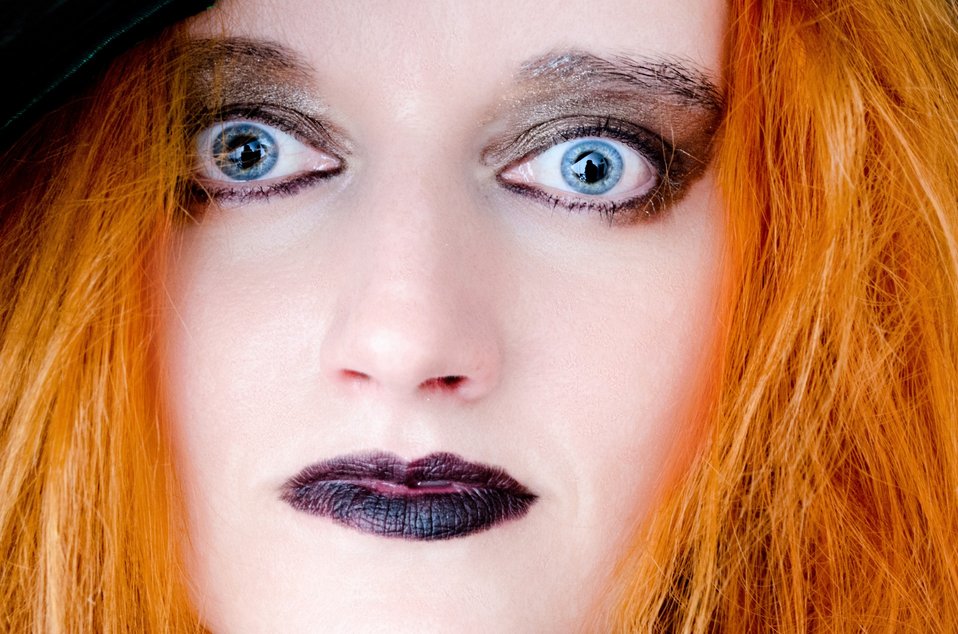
Halloween witch.